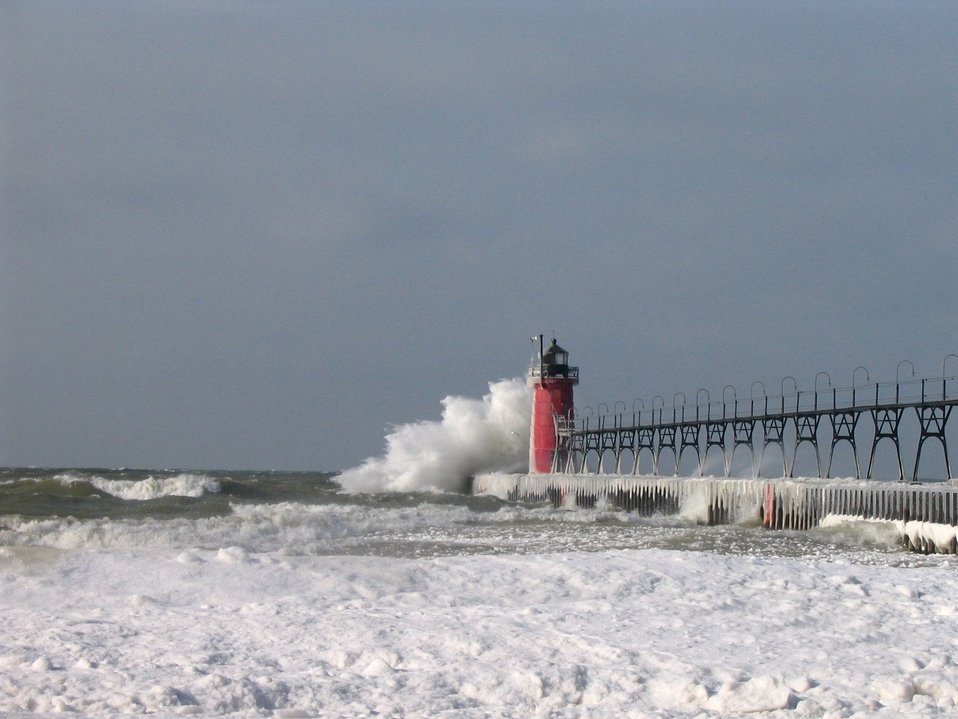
South Haven Lighthouse in a winter storm